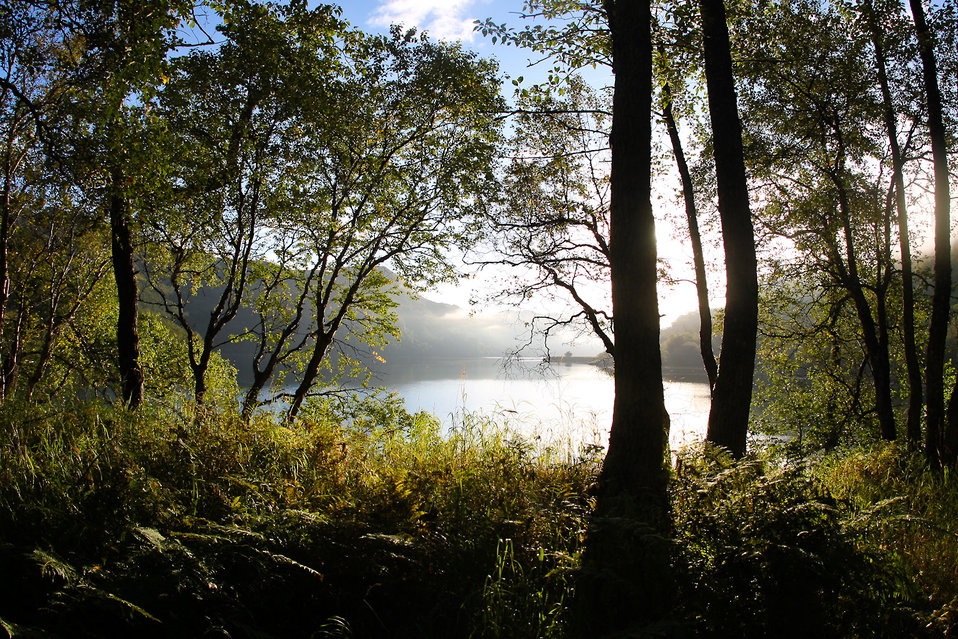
Uganik Lake View

Lisa Hupp/USFWS